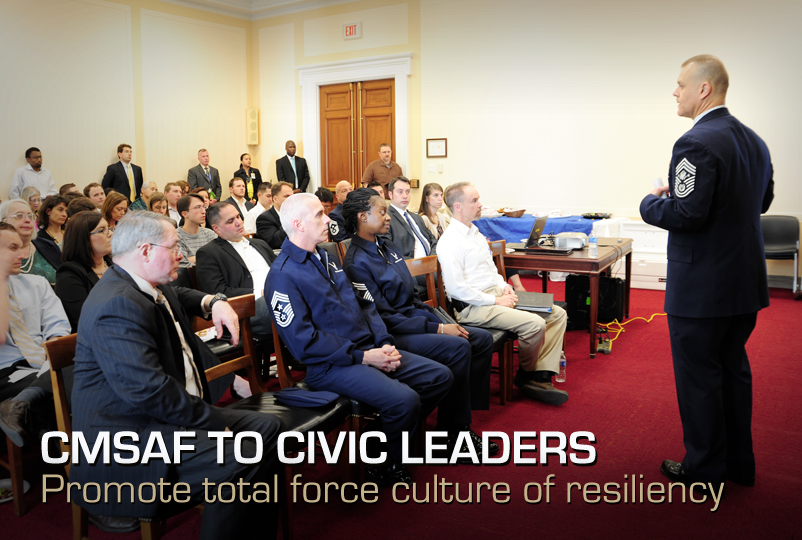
CMSAF speaks to civic leaders